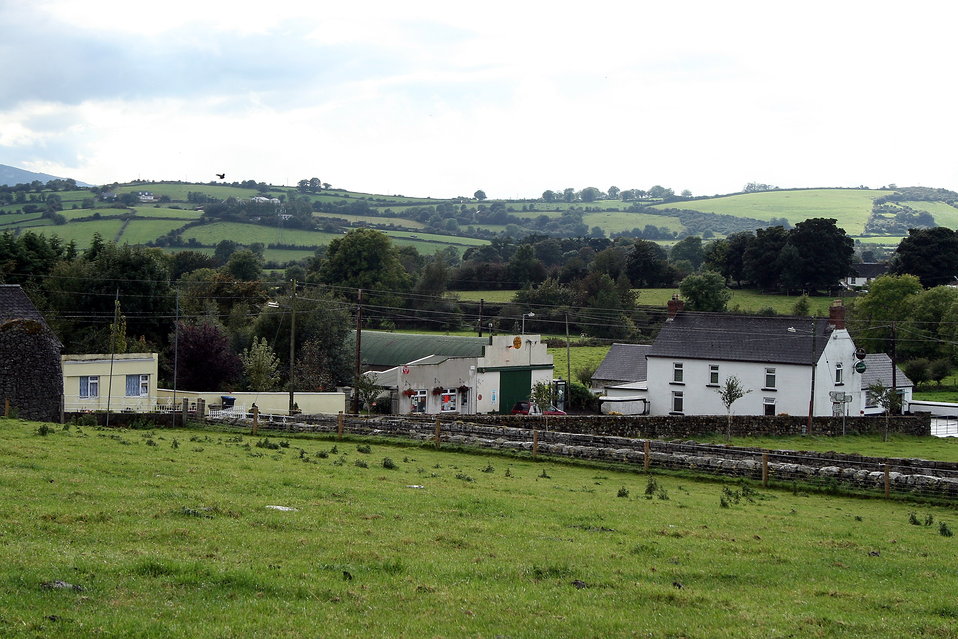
Ballymurphy, County Carlow, Ireland